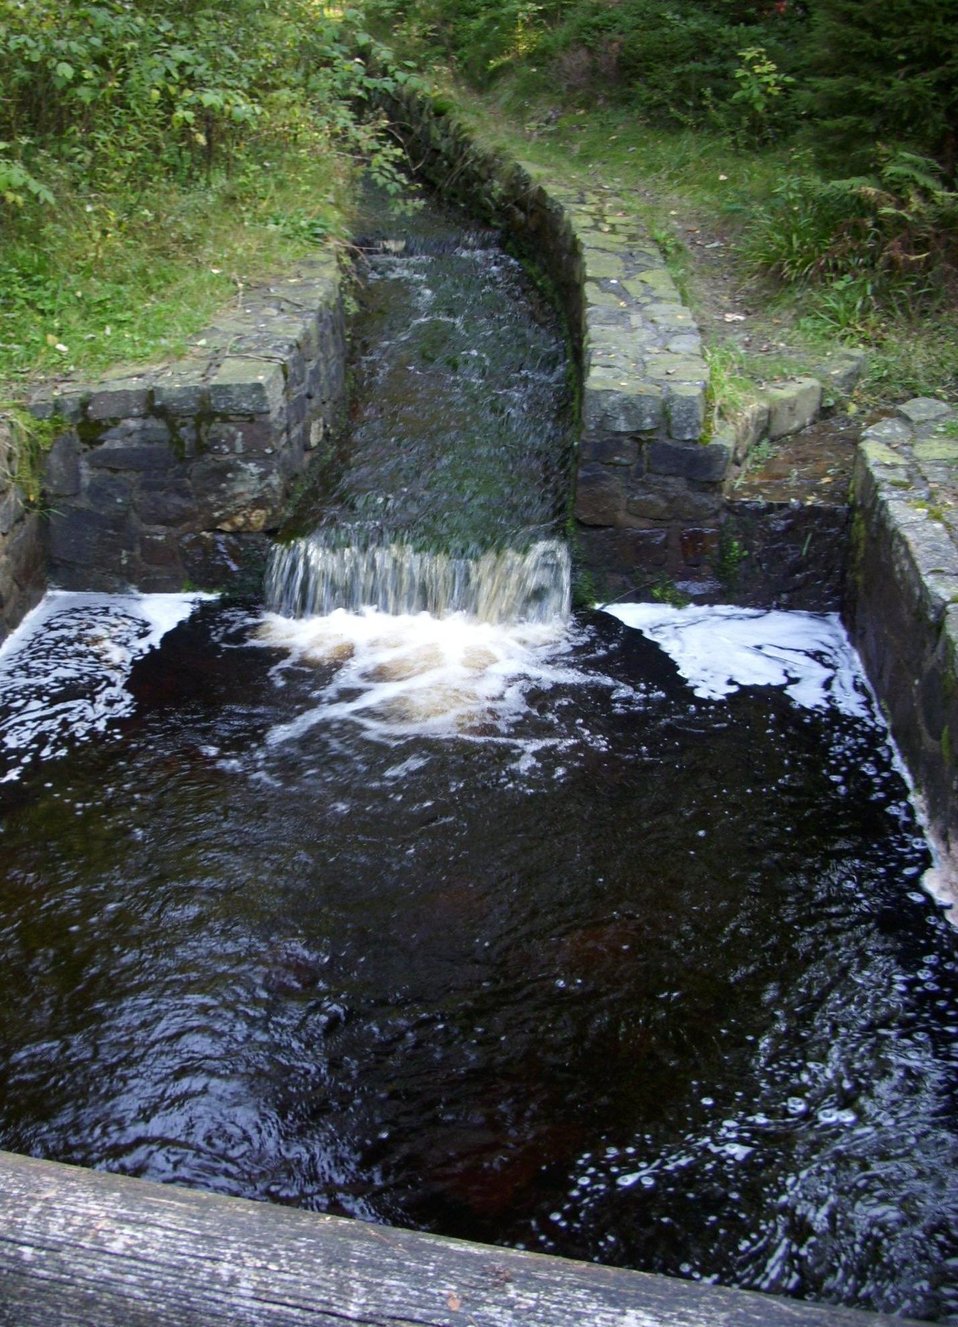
Deutsch: Drecksumpf des Dammgrabens am Bruchberg